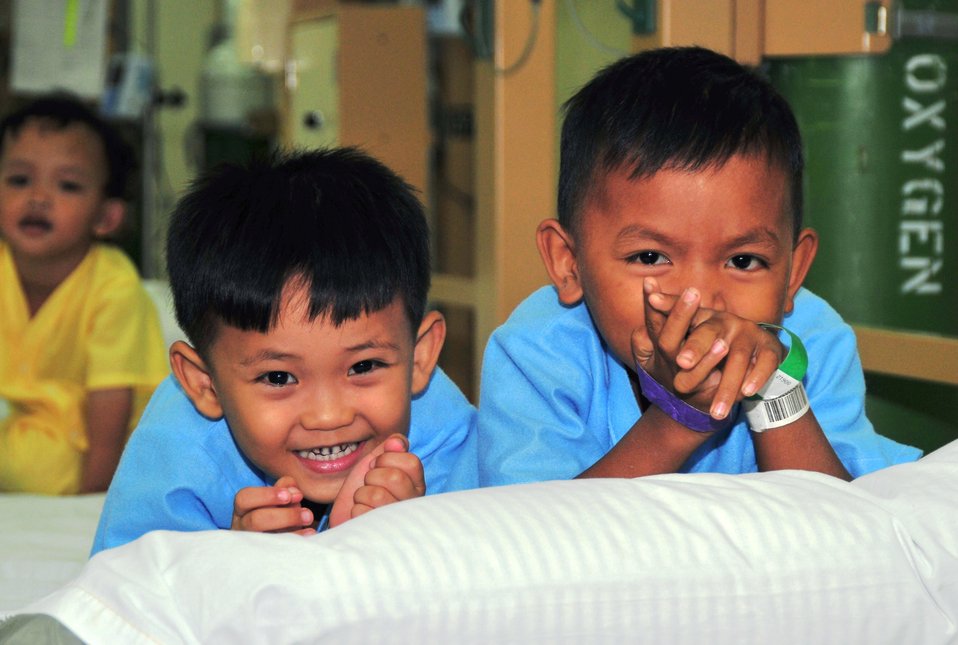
Youth Patients Play After an Examination

Two young patients play after an examination aboard the Military Sealift Command hospital ship USNS Mercy (T-AH 19) on June 26, 2010, in Sihanoukville, Cambodia. Mercy is in Cambodia conducting Pacific Partnership 2010, the fifth in a series of annual U.S. Pacific Fleet humanitarian and civic assistance endeavors designed to strengthen regional partnerships.